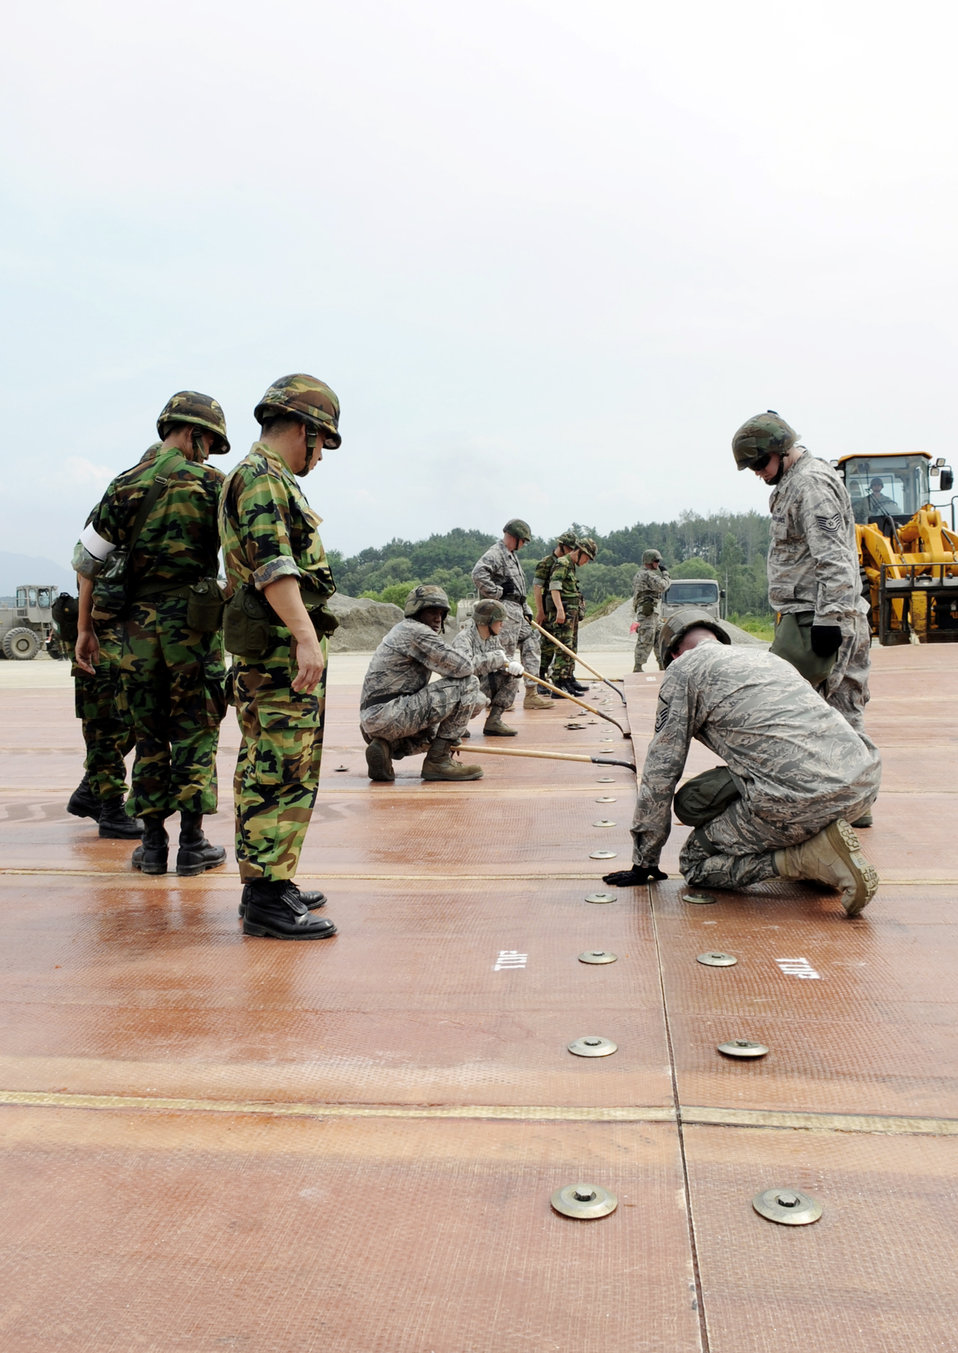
Osan AB's airfield damage repair team train with South Korean air force

Airmen from the 51st Civil Engineer Squadron use shovels to lift a folded fiberglass mat as a 10,000-pound forklift adjusts the mat on a simulated runway Aug. 19 at Jungwon Air Base, South Korea. The mats are being moved as part of a joint combined rapid runway repair training exercise with Airmen from the South Korean air force's 19th Tactical Fighter Wing and 91st Air Civil Engineer Group. The 51st CES Airmen are assigned to Osan Air Base, South Korea.